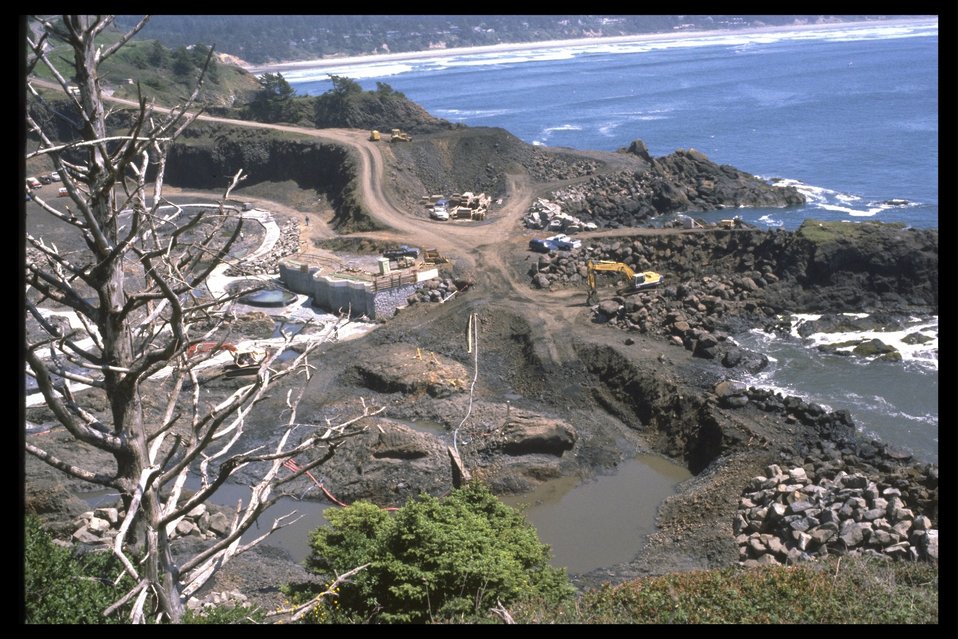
Construction of Quarry Cove tidepools.